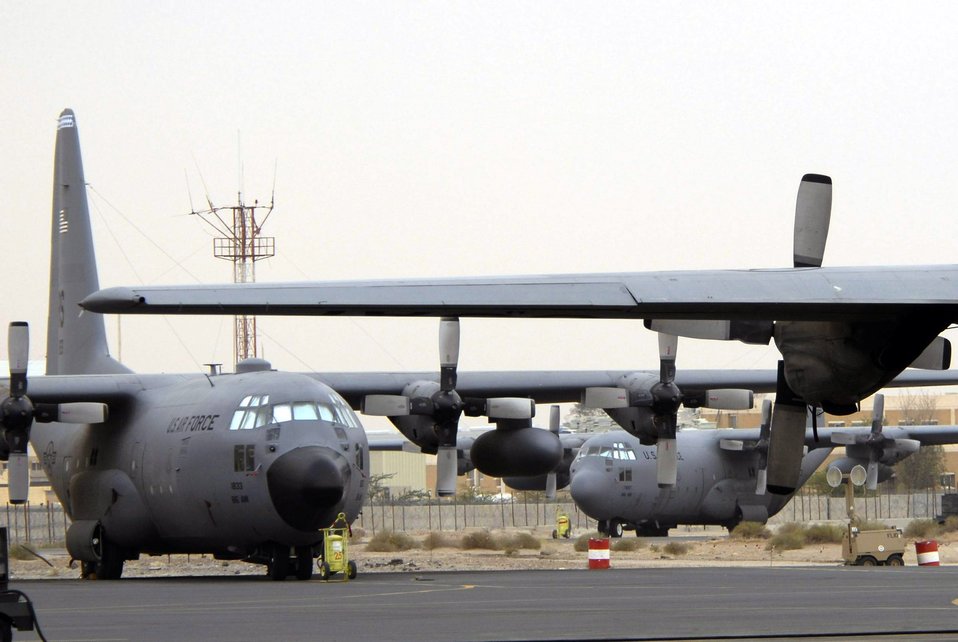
The workhorse at rest

C-130 Hercules aircraft wait for an airlift mission at a Southwest Asia location. These C-130s transport coalition forces and equipment in support of operations Enduring Freedom and Iraqi Freedom